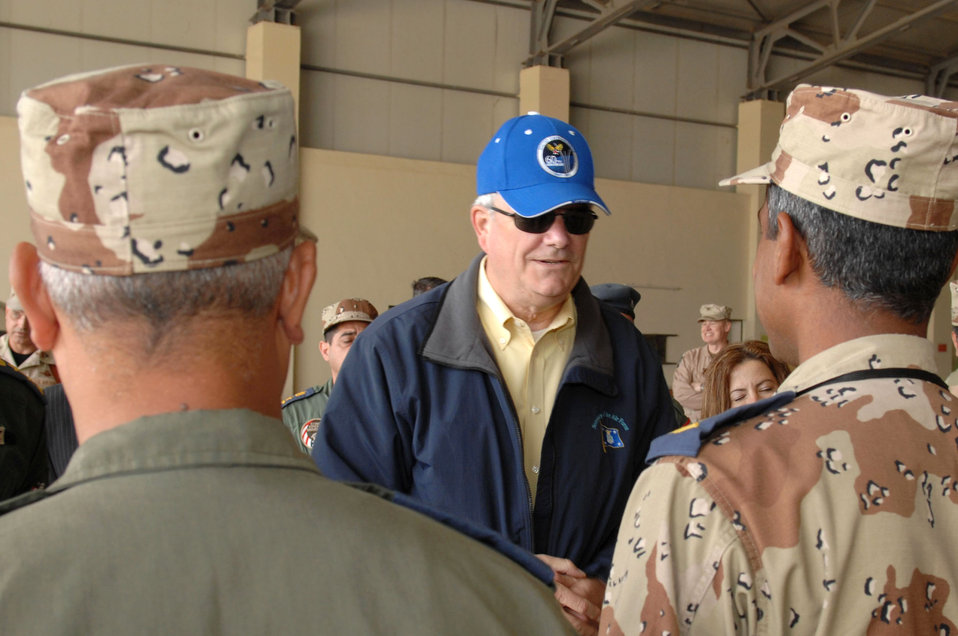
SECAF visits Airmen at Kirkuk

Secretary of the Air Force Michael W. Wynne visits with Squadron 3, Iraqi Air Force March 28 at Kirkuk Air Base in Iraq.